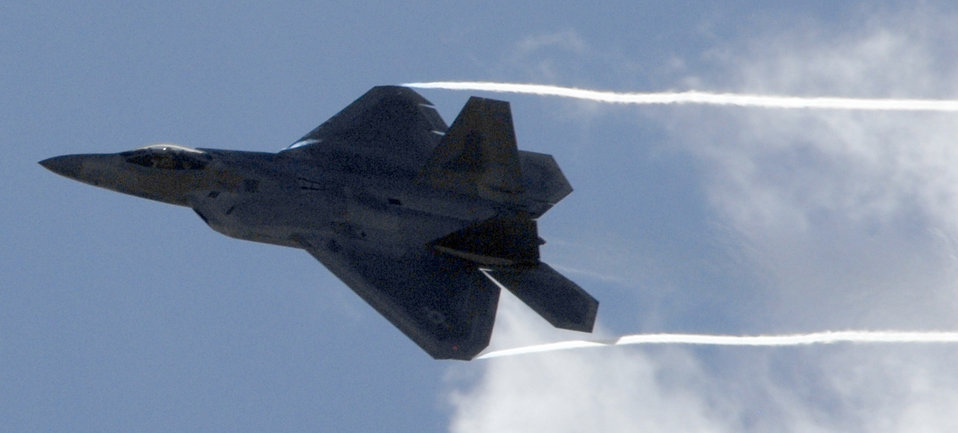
F-22 Raptors in Hawaii

An F-22 Raptor soars through the sky during its arrival ceremony at Joint Base Pearl Harbor-Hickam, Hawaii, July 9, 2010. The F-22, the Air Force's newest aircraft, represents an exponential leap in warfighting capabilities for U.S. forces in the Pacific.